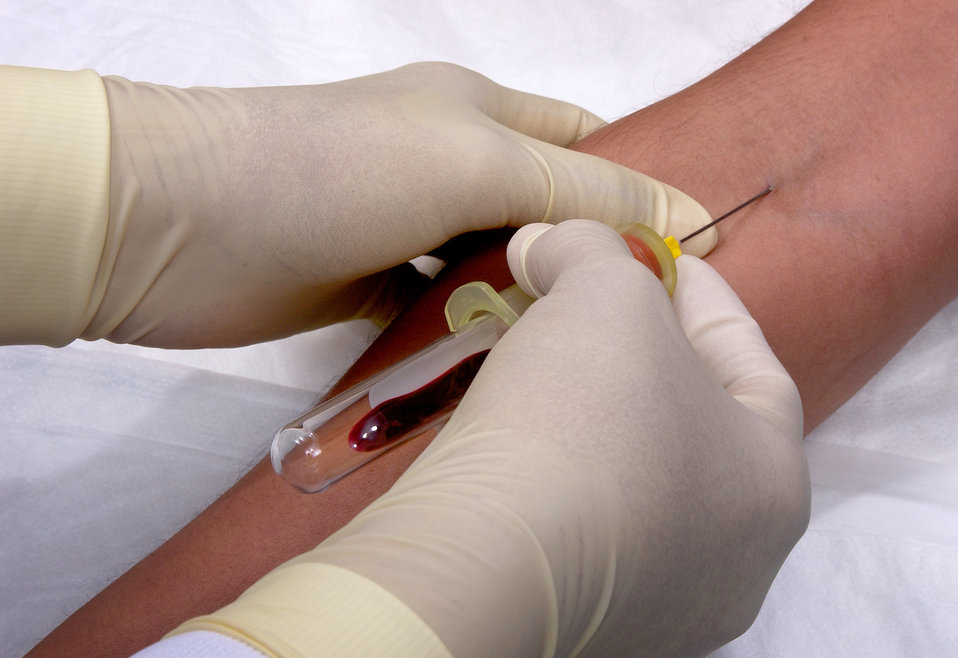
This image depicts a trained phlebotomist, i.e., a technician skilled in the practice of drawing blood from a patient, who was performing a percutaneous antecubital venipuncture into this patient's right antecubital vein. This image is the thirteenth in a series of 19 images outlining the steps involved in extracting blood during the venipuncture process.